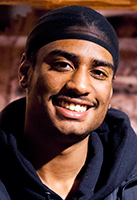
Summer Jobs R6 nik

College student Nik Vasquez of Seattle, WA worked on the Mt. Baker-Snoqualmie National Forest for three summers. The U.S. Forest Service and its conservation partners hire more than 3,000 people annually for summer positions that involve work such as reducing the impacts of climate change on the nation’s natural resources, empowering Native American communities, building trails, enhancing wildlife habitat, and improving and restoring cultural and historic landmarks.